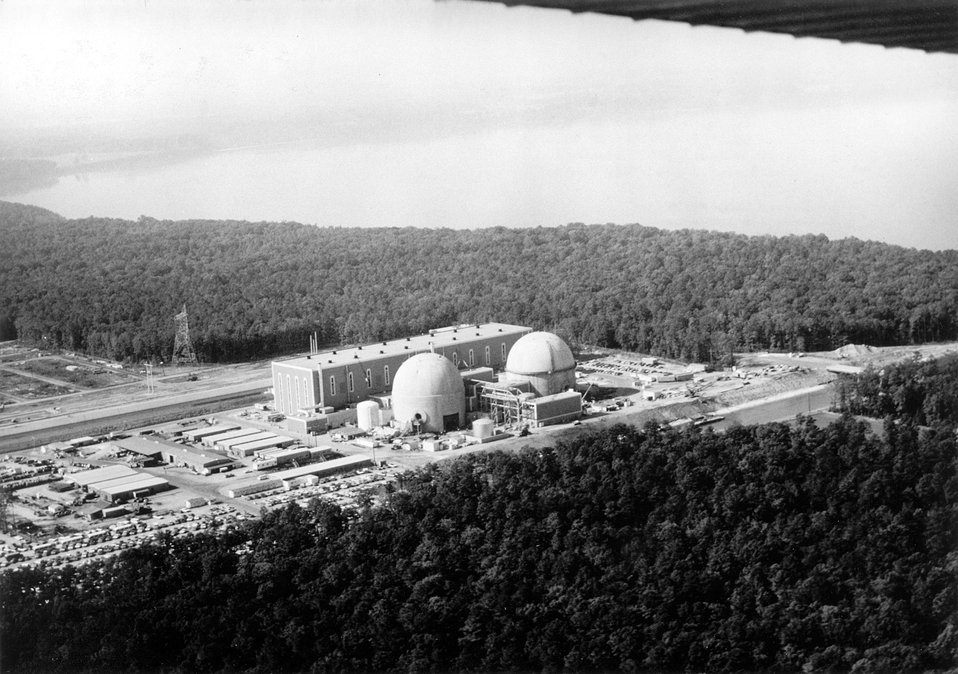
View of Virginia Electric and Power Company's Surry Power Station at Surry, Virginia. Each of the two nuclear generating units is designed to produce 788,000 electrical kilowatts. Circa 1972.